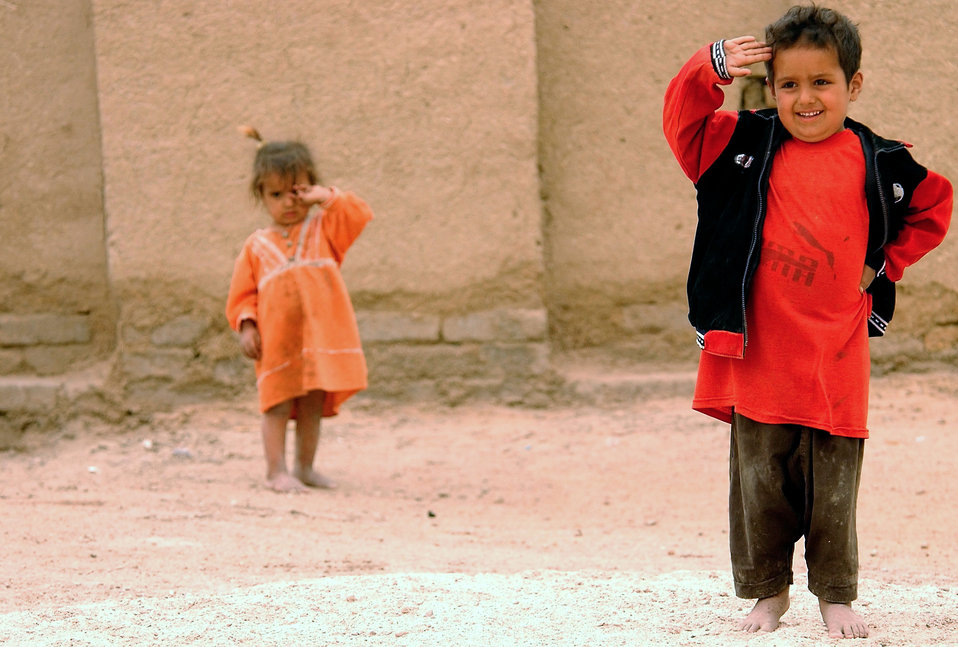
Salute

OPERATION IRAQI FREEDOM -- A young Iraqi boy salutes members of the 486th Civil Affairs Company as they deliver water to his village on April 11. The 486th Civil Affairs Company, from Broken Arrow, Okla., is deployed to an undisclosed location in support of Operation Iraqi Freedom. Operation Iraqi Freedom is a multi-national coalition effort to liberate the Iraqi people, eliminate Iraq's weapons of mass destruction and bring an end to the regime of Saddam Hussein.